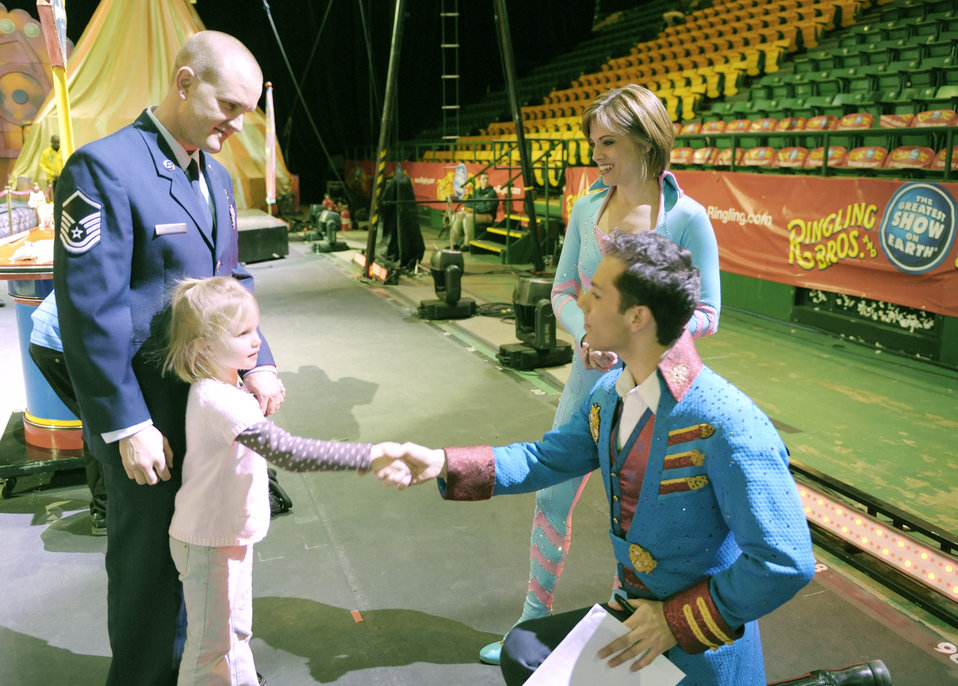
YOAFF & Circus

Master Sgt. Cameron Rogers looks on as his 5-year-old daughter Laine shakes hands with Magical Zingmaster Alex Ramon prior to the start of the Ringling Bros. and Barnum & Bailey